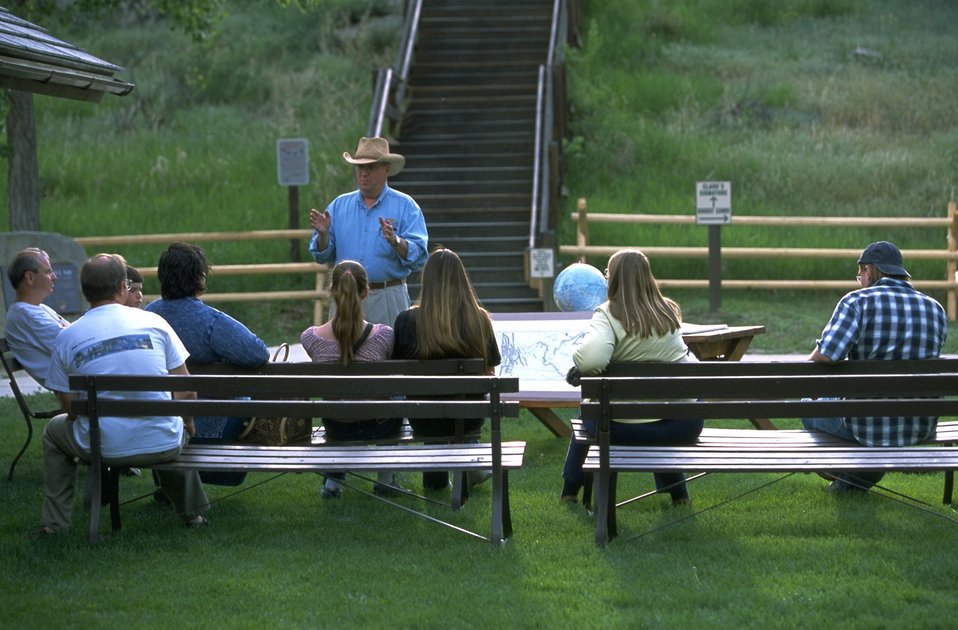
Back lawn of the Pompeys Pillar Visitor Center. Interpretative program in progress on mapping by Captain William Clark.